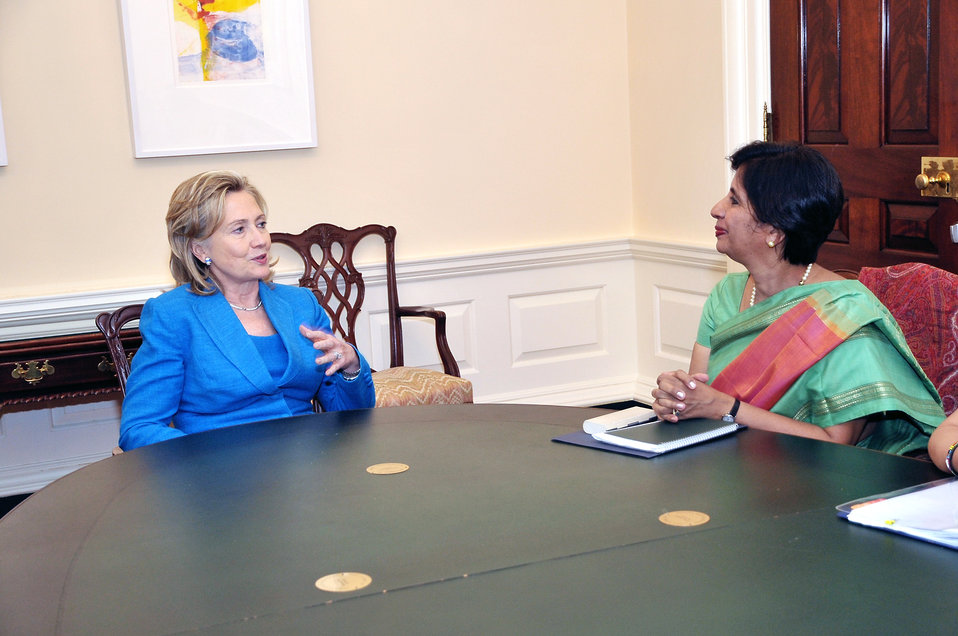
Secretary Clinton Meets With Indian Foreign Secretary Rao

U.S. Secretary of State Hillary Rodham Clinton meets with Indian Foreign Secretary Nirupama Rao at the U.S. Department of State in Washington, D.C., on September 17, 2010.